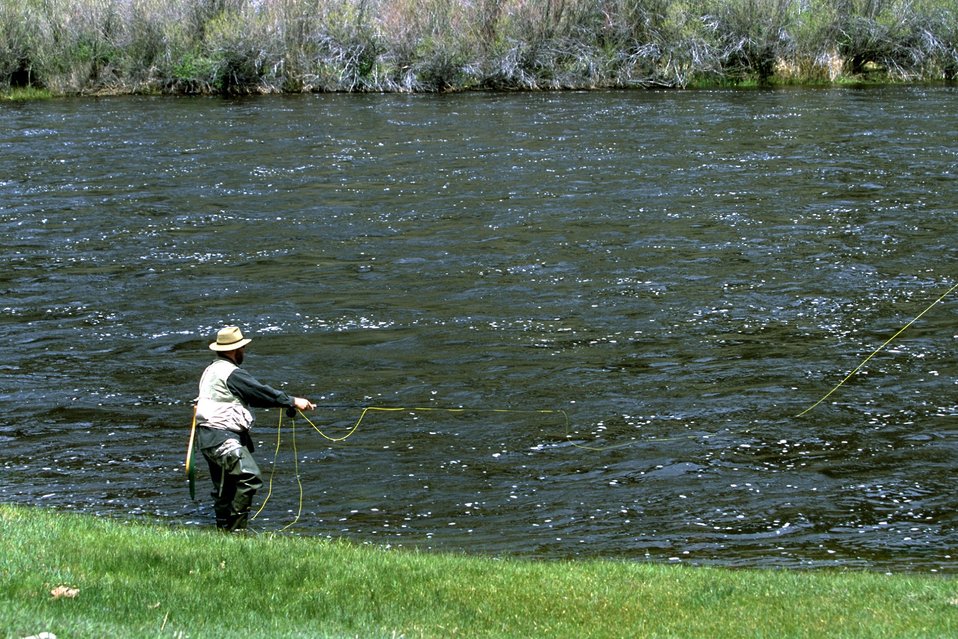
Fisherman on the Big Hole River